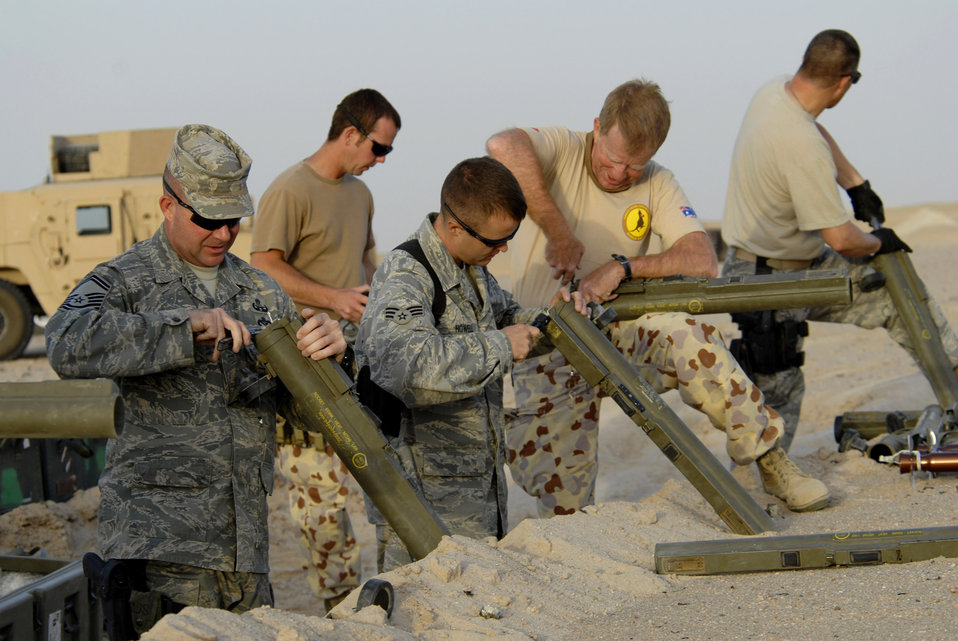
Americans, Australians go out with a bang

Members from the 386th Expeditionary Civil Engineer Squadron Explosive Ordnance Disposal Flight and Australian army ammunition technicians prepare light anti-armor weapon rockets for disposal in prior to a controlled detonation June 20 at an EOD range in Southwest Asia. The controlled detonation is destroying unserviceable munitions. The joint detonation also provided an opportunity for the U.S. and coalition forces to enhance their relations while learning some of the slight differences in operating procedures.